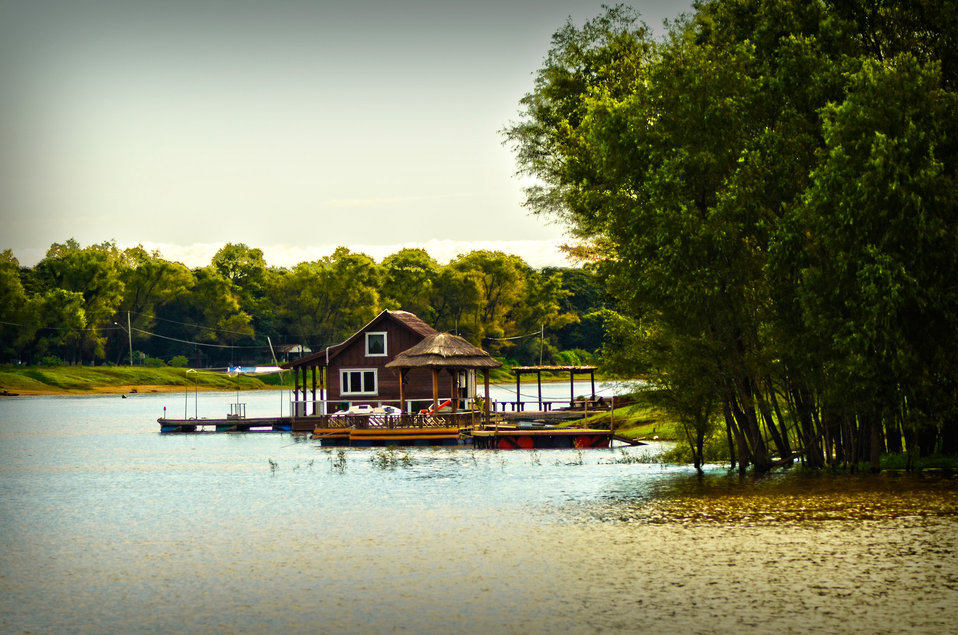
House on the water in rio pardo - rs.